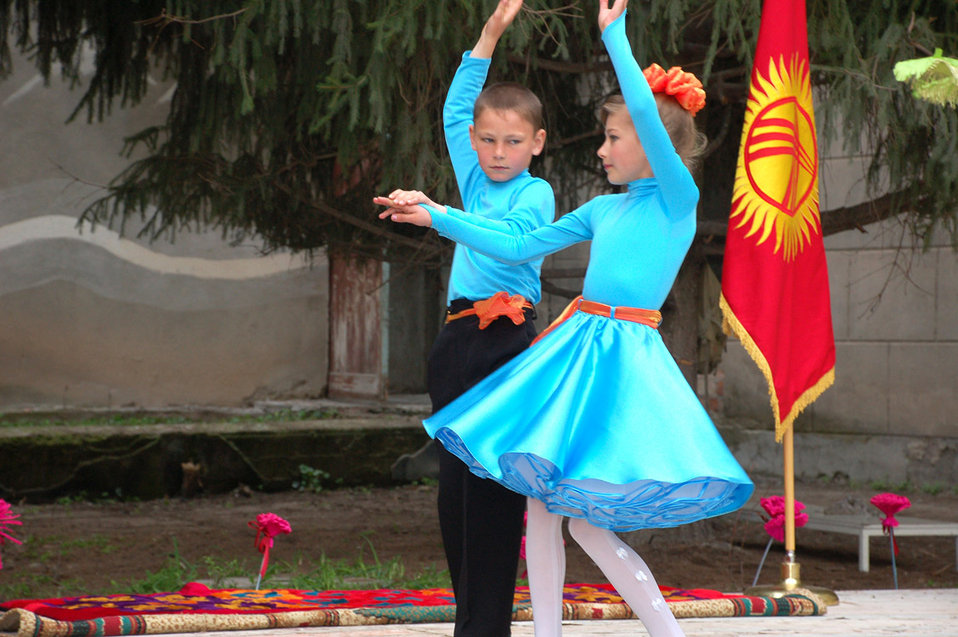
School renovation project builds bond between U.S., Kyrgyz Republic

Kyrgyz children dance in a celebration concert held during a ground-breaking ceremony April 14 for the renovation project at Birdik Village School, Kyrgyzstan. The $470,000 project to repair the school is a partnership between the U.S. State Department, U.S. Central Command, Manas Air Base and Birdik Village.